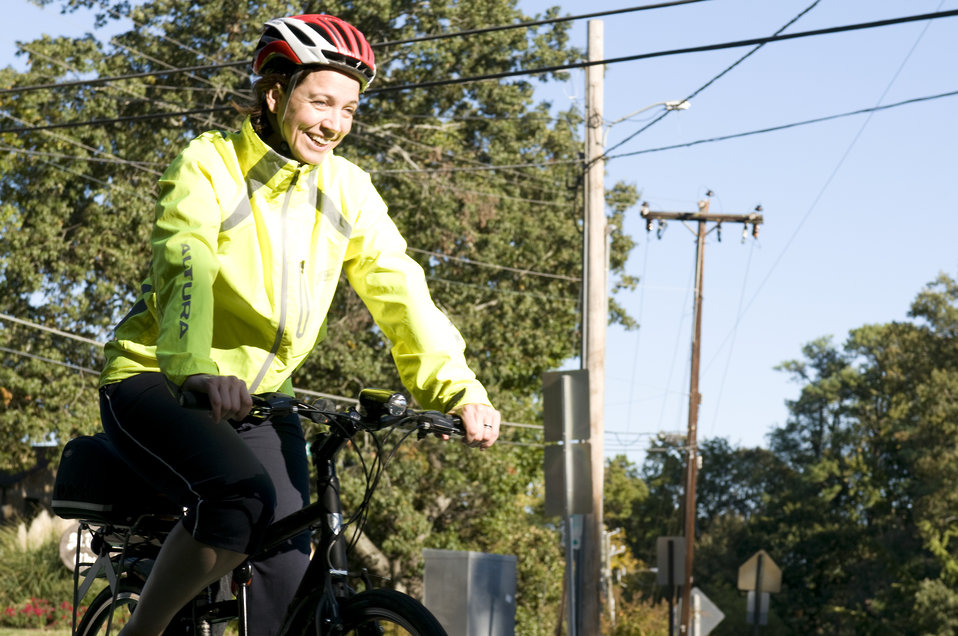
This photograph depicts a smiling female bicyclist, who was riding her bicycle on a sunny Georgia morning. Note the brightly-colored windbreaker she was wearing, which would help drivers see her more easily, as well as the protective, aerodynamic helmet, and the snug leggings, all adding to an overall safer bike ride.